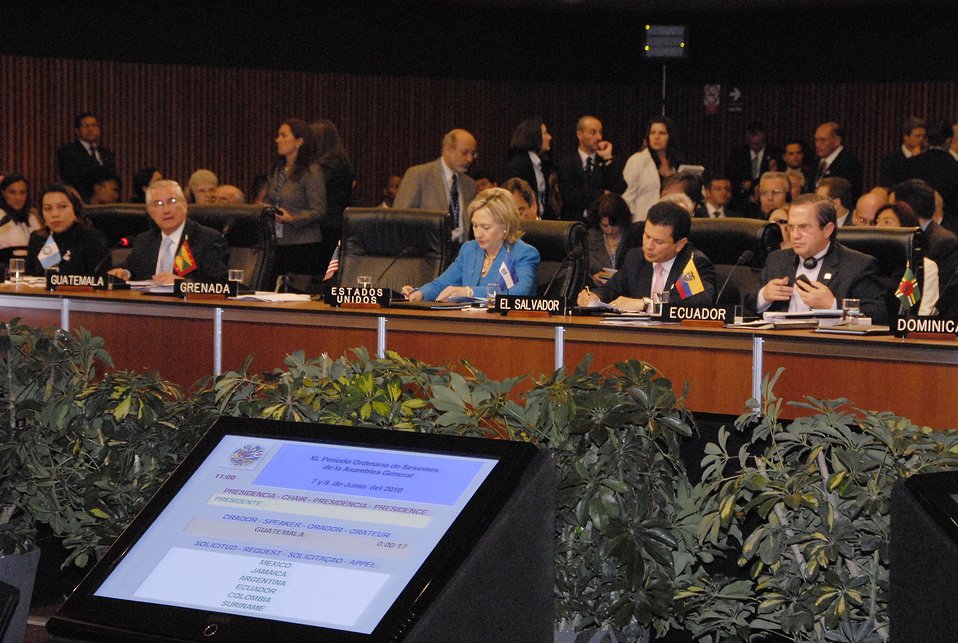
Secretary Clinton Participates in 40th OAS Assembly

U.S. Secretary of State Hillary Rodham Clinton participates in the 40th Assembly of the Organization of American States in Lima, Peru, on June 7, 2010.